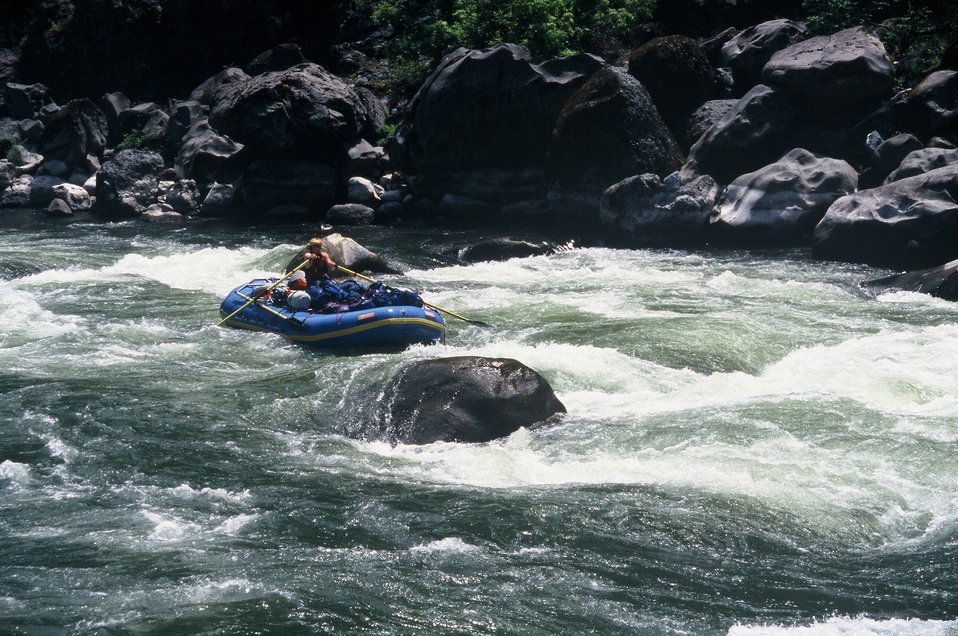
Wild section of the Rogue River from Grave Creek to Foster Bar May 19 to May 22.